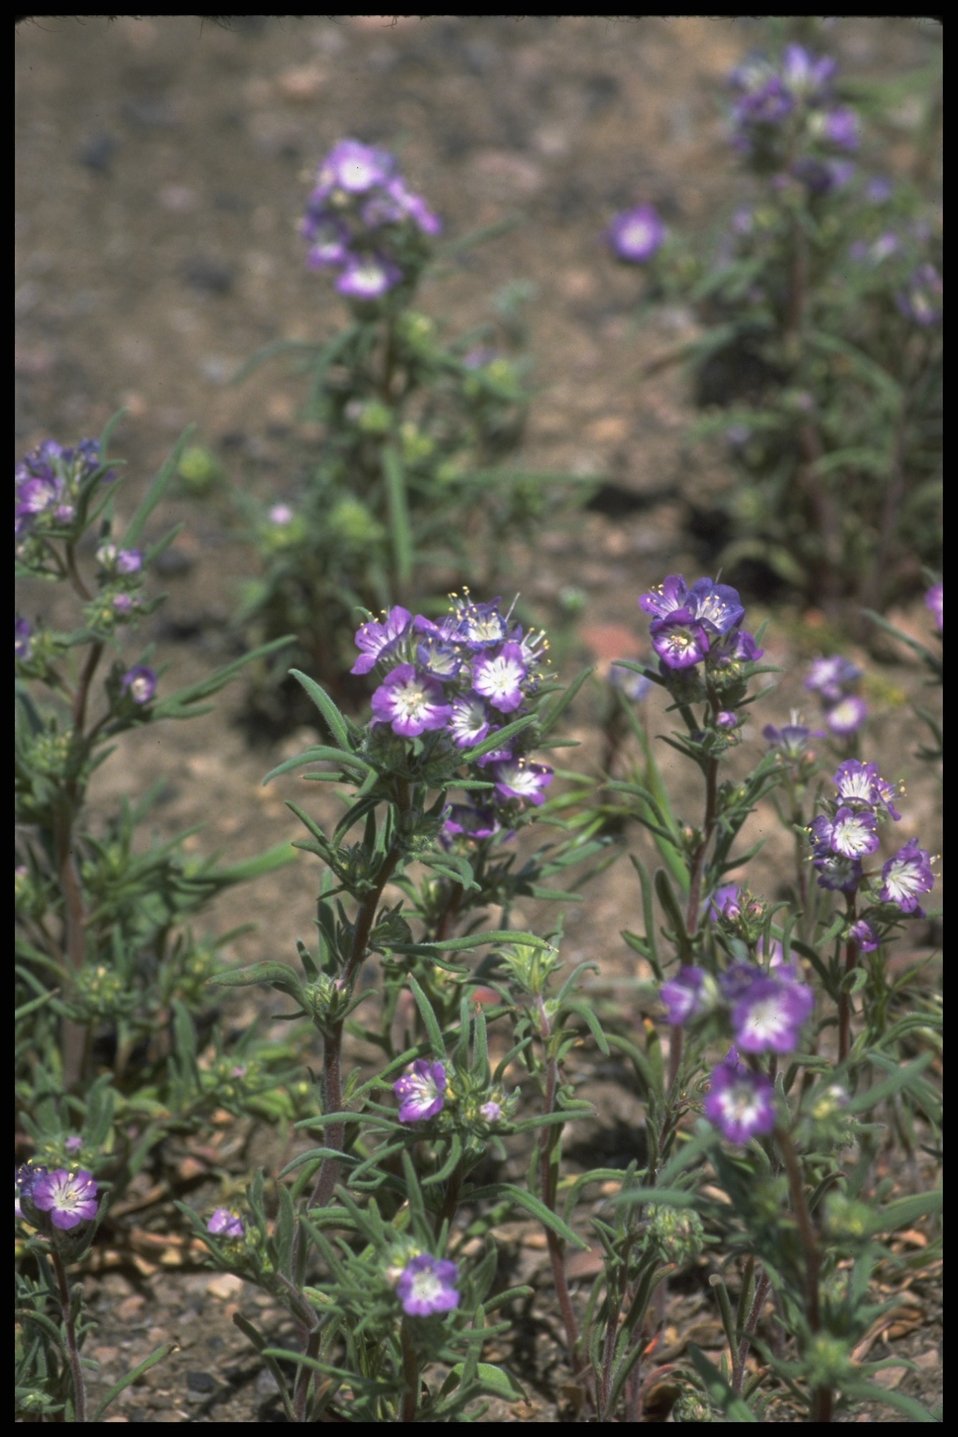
Medium shot of Liniar Leaf Phaclia wildflower habitat, Lakeview District.